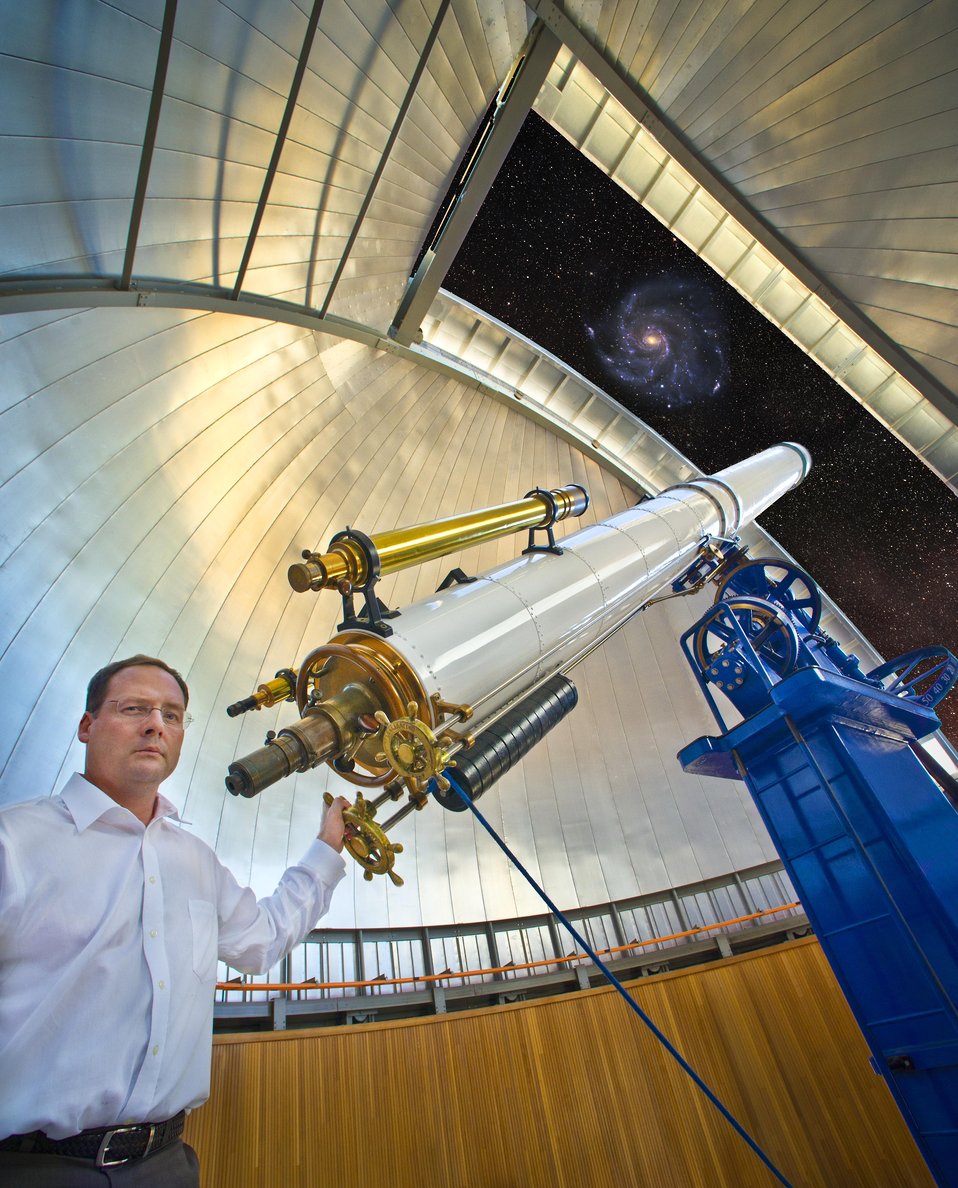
Peter Nugent, Berkeley Lab Computational Astro-Physicist and Adjunct Professor of Astronomy at UC Berkeley, at the Rachel 20th telescope in the Leah Dome of the Cabot Space & Science Center Observation.

First discovered the Type 1a supernova, dubbed PTF11kly, on August 23, 2011. PTF11kly occurred in the Pinwheel Galaxy,located in the big Dipper, otherwise known as the Ursa Major constellation.